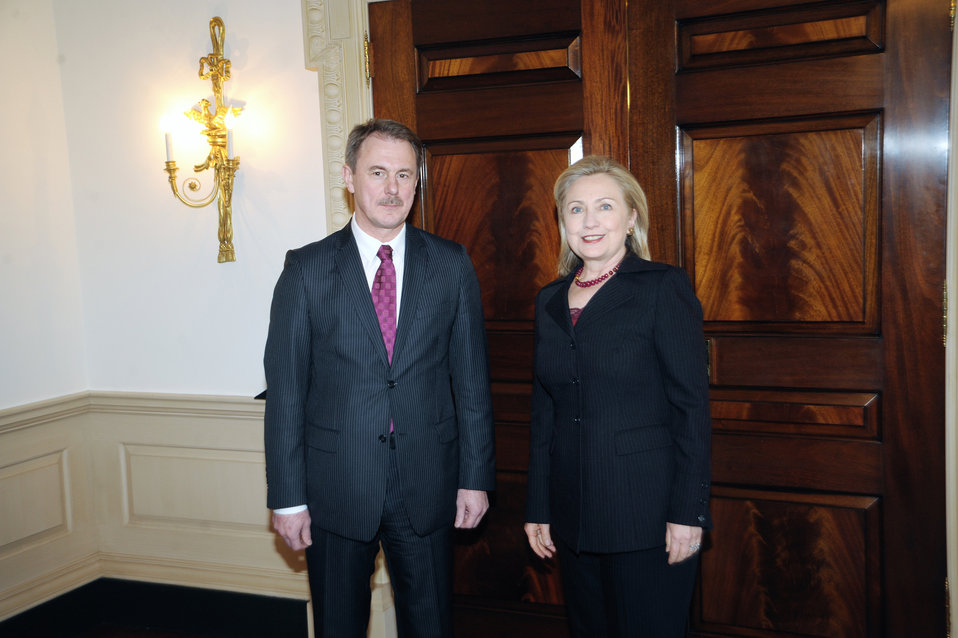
Secretary Clinton Poses for a Photo With Latvian Foreign Minister Kristovskis

U.S. Secretary of State Hillary Rodham Clinton poses for a photo with Latvian Foreign Minister Girts Valdis Kristovskis at the U.S. Department of State in Washington, D.C., on February 22, 2011.